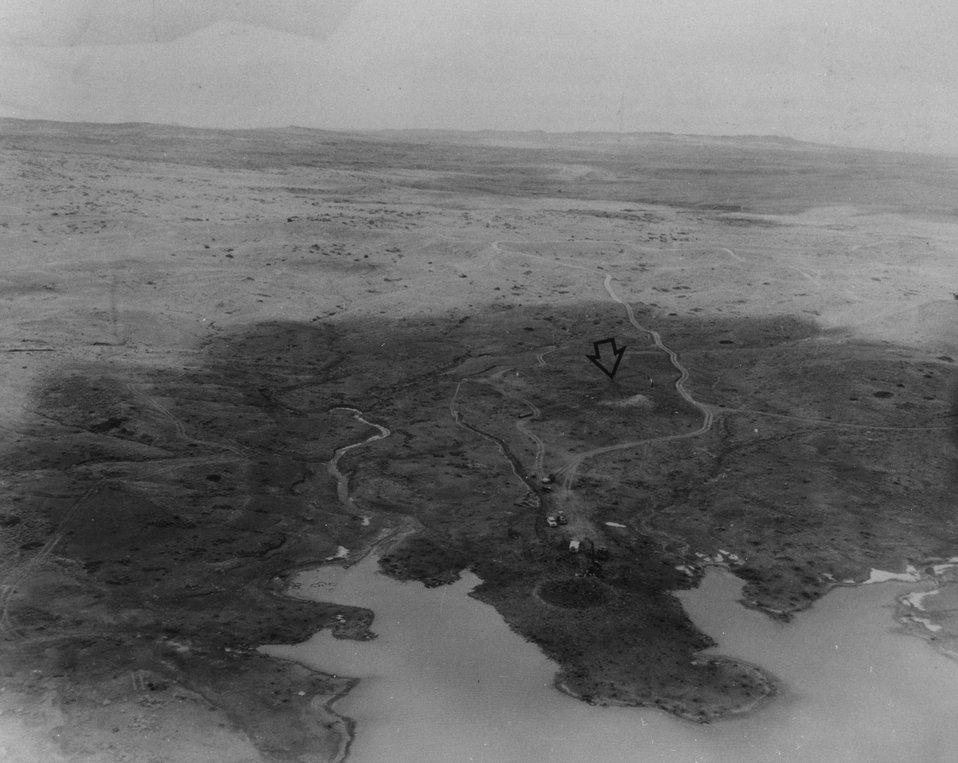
The AEC and the U.S. Army Corps of Engineers are jointly developing experience and information on the cratering and seizmic effects of explosives as a prelude to the possible use of nuclear explosives for civil engineering purposes. c. 1967